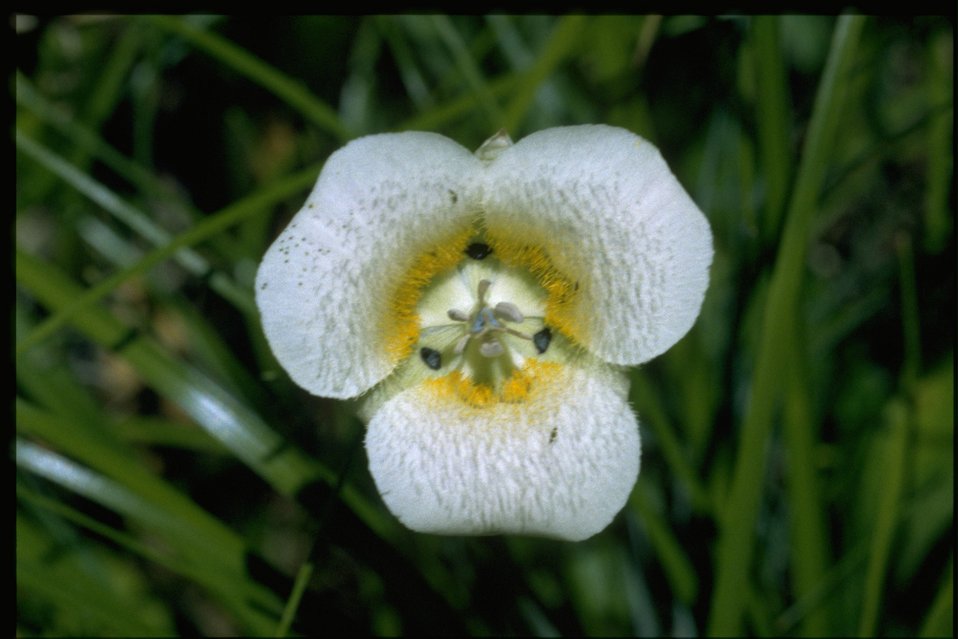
Closeup shot of Calochortus subalpinus.